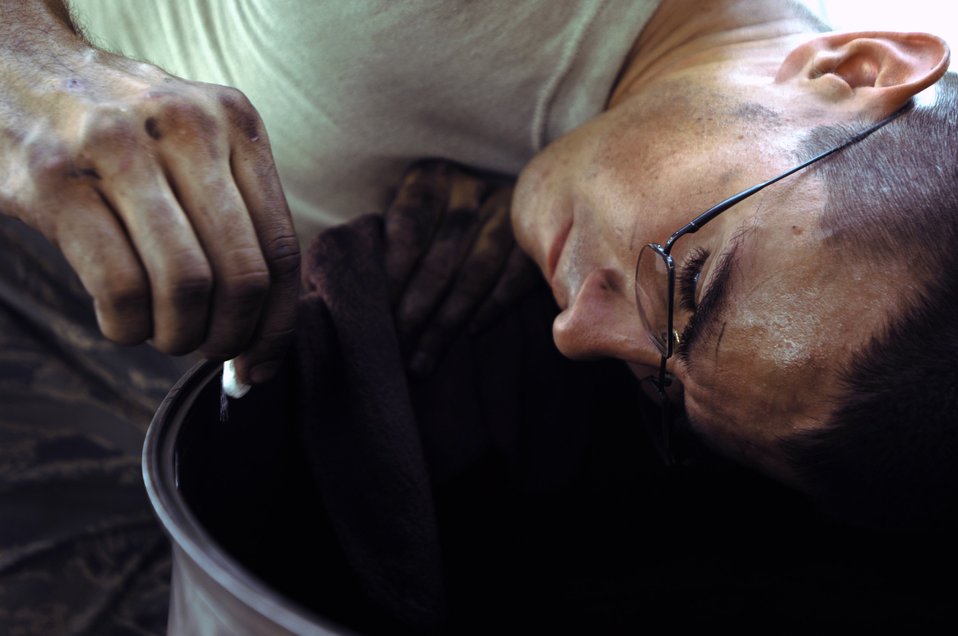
An ounce of prevention

Senior Airman Sean Sweeney marks a crack found on the rear bearing support on a C-130 Hercules engine during a post-flight inspection Aug. 22 at Joint Base Balad, Iraq. Airman Sweeney is an aerospace propulsion technician with the 777th Expeditionary Aircraft Maintenance Squadron deployed from Little Rock Air Force Base, Ark. His hometown is Columbia, N.J.